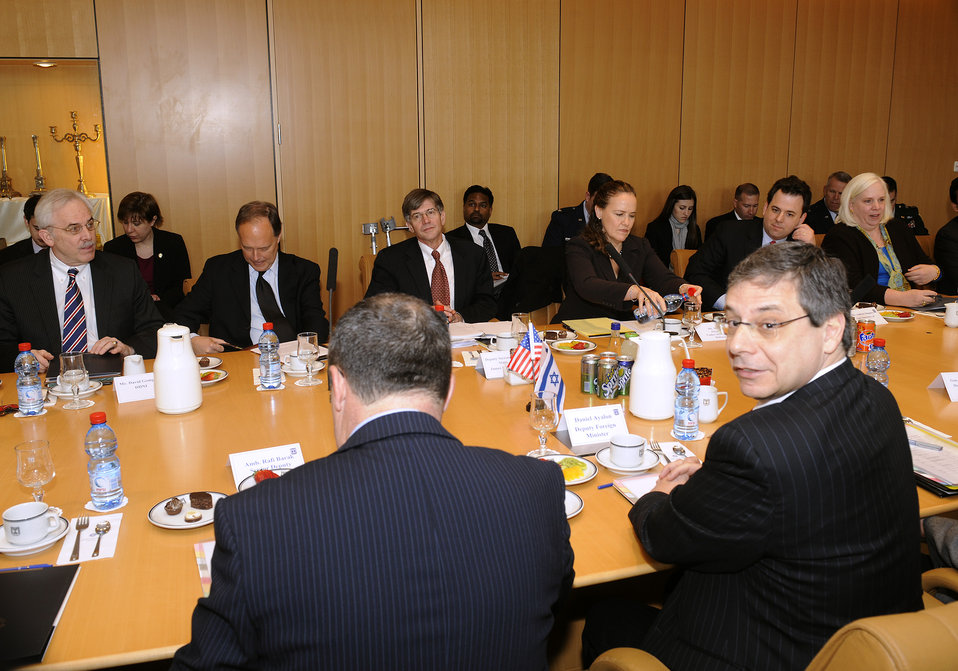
Deputy Secretary of State James B. Steinberg With Deputy Foreign Minister Danny Ayalon

U.S. Deputy Secretary of State James B. Steinberg sits with Israeli Deputy Foreign Minister Danny Ayalon at a private breakfast at the Strategic Dialogue Opening Session at the Ministry of Foreign Affairs in Jerusalem, February 25, 2010.